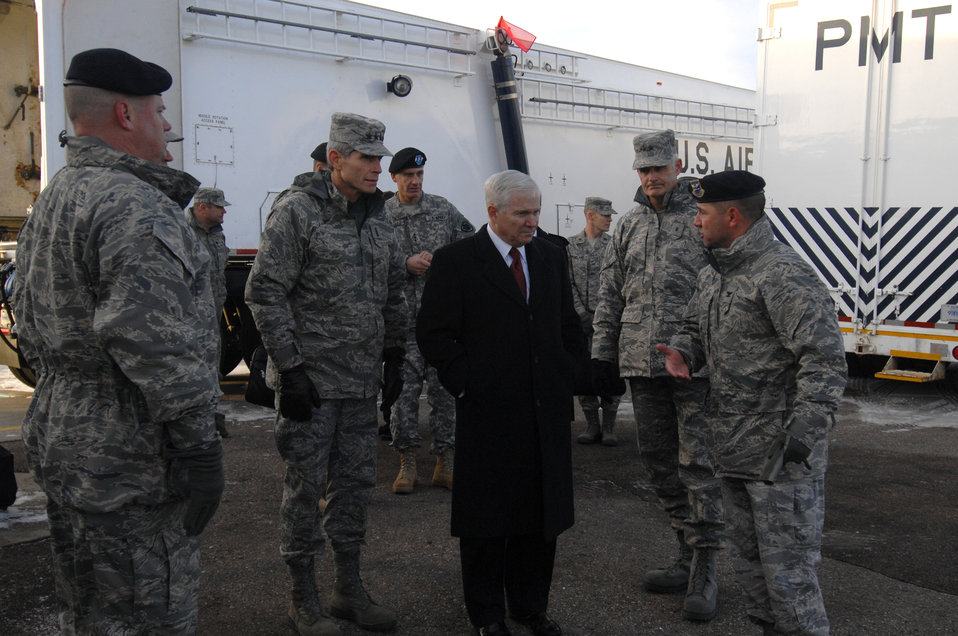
CSAF, SECDEF visit Minot Air Force Base

Secretary of Defense Robert M. Gates and Air Force Chief of Staff Gen. Norton Schwartz get briefed Dec. 1 at the Uniform 01 launch facility training site at Minot Air Force Base, N.D. by members of the 91st Missile Wing staff. The 91st MW is one of three Air Force operational intercontinental ballistic missile units.